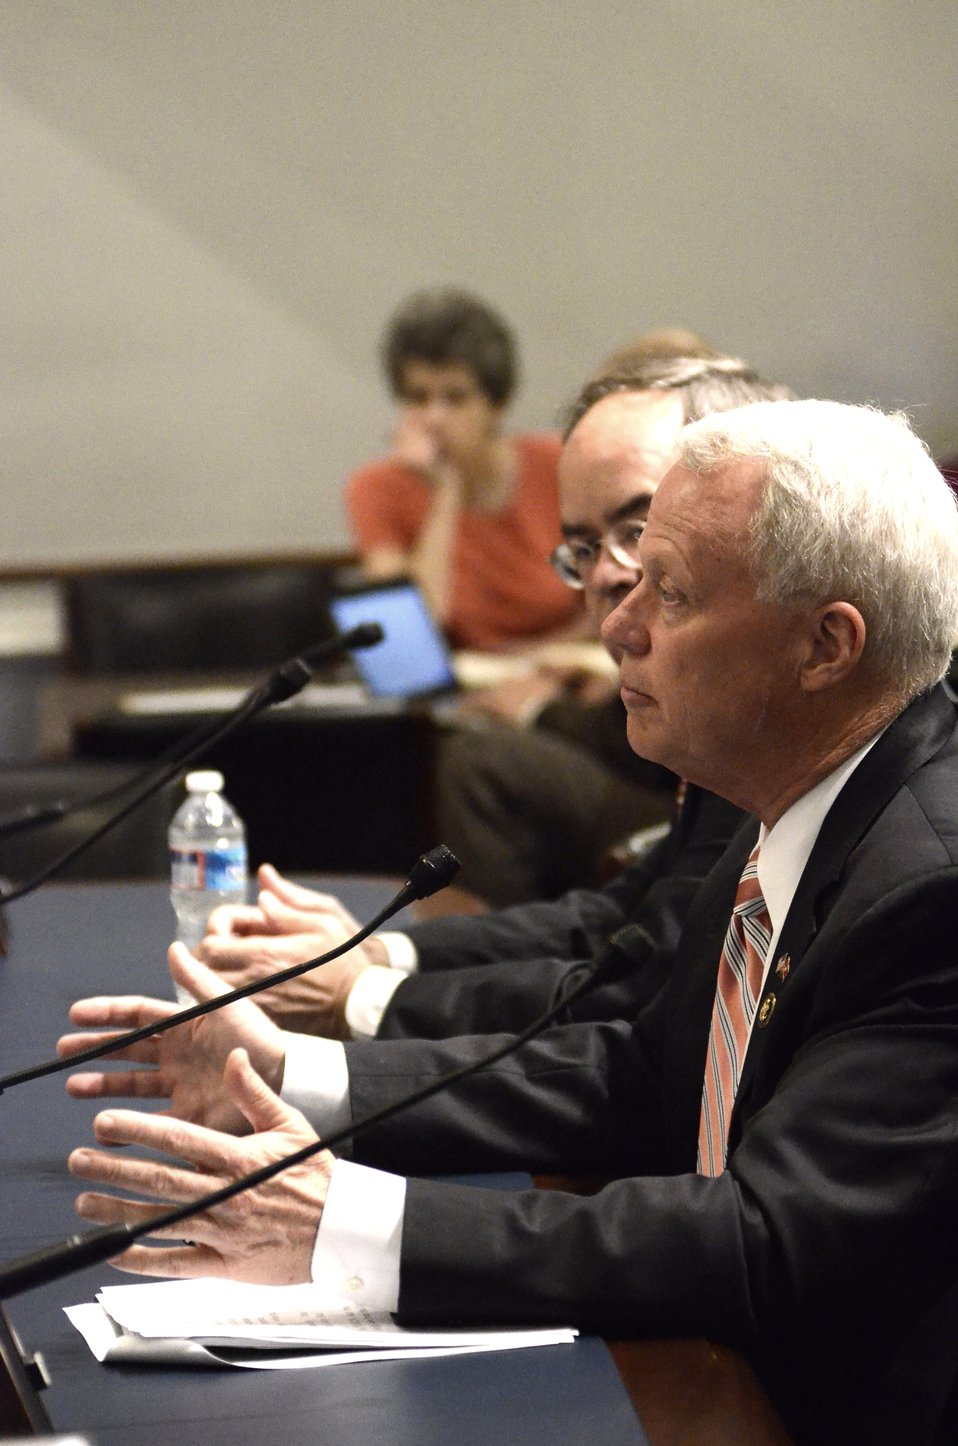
Congressman Paul C. Broun (GA) testifies on Retailers & Entertainers Lacey Implementation & Enforcement Fairness Act & Freedom from Over-Criminalization & Unjust Seizures Act at the Longworth House Office Building in Washington, D.C. on Tuesday, May 8, 2012.